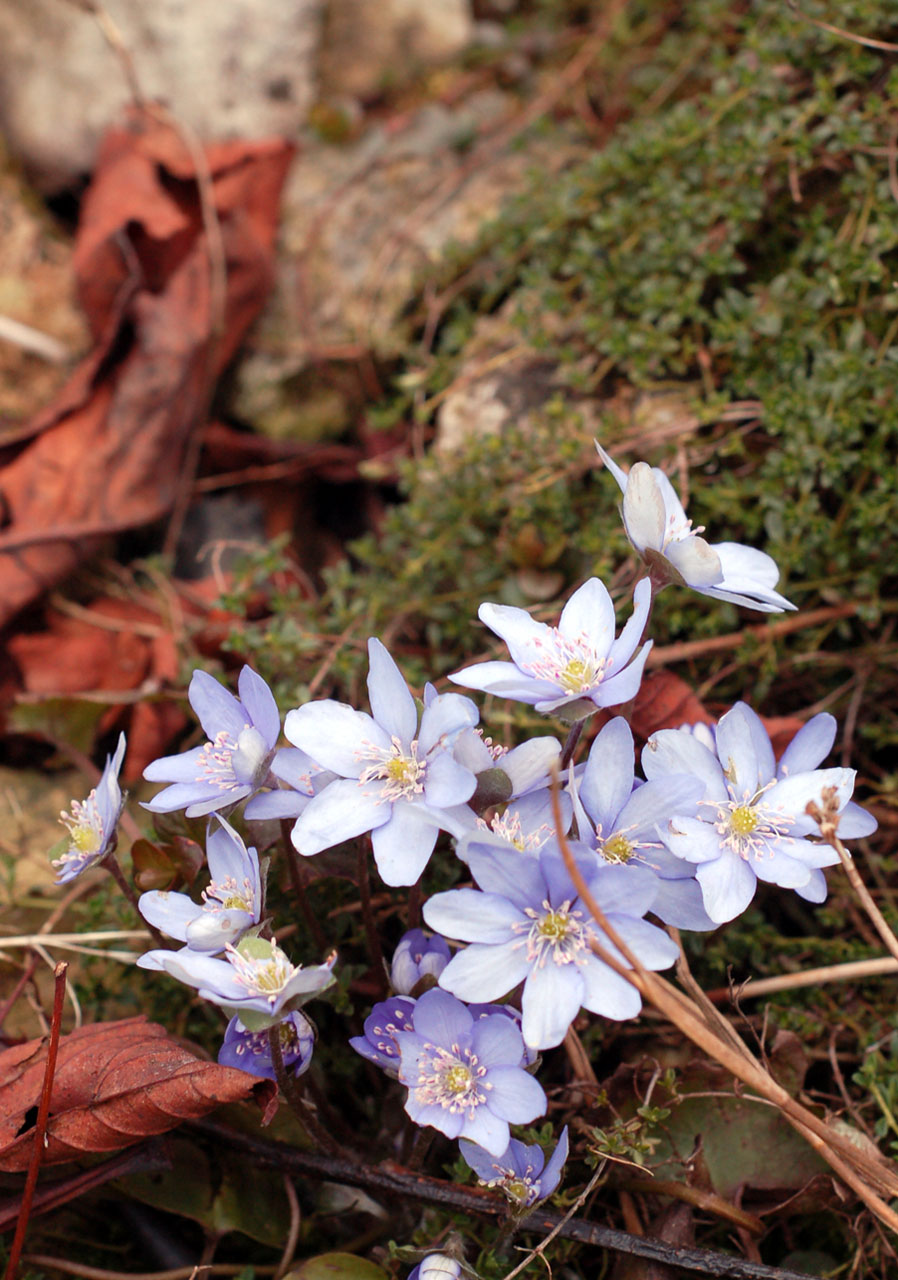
Blue flowers

Wild blue flowers - early spring.